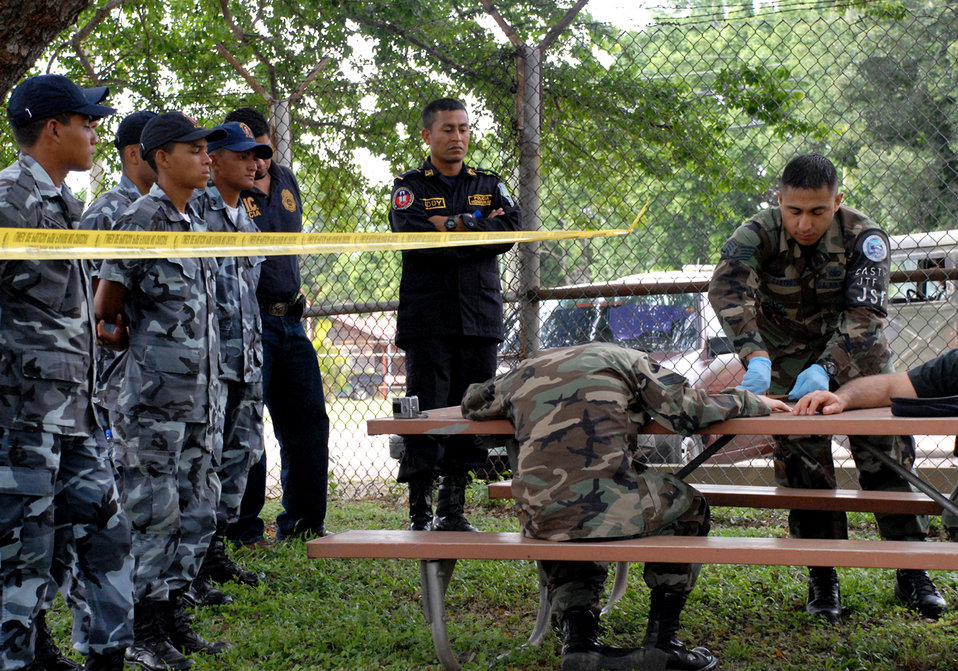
CSI Honduras: JSF teaches crime scene processing to Honduran police

Staff Sgt. Edgar Castro, joint security forces, logs evidence from simulated victims during a training class with police from nearby Comayagua and La Paz police divisions, as well as cadets from the La Paz Police Academy. The crime scene processing course is one in a series of classes taught this year, with other lessons involving handcuff procedures, high-risk traffic stops and riot control.